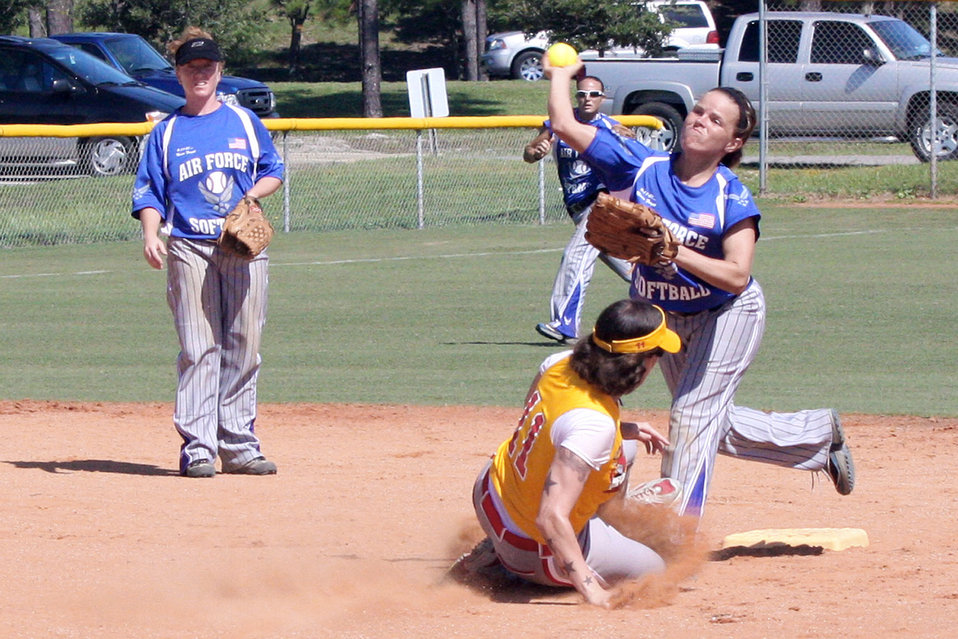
Air Force teams earn gold medals at armed forces softball championships

Toni Epps from Robins Air Force Base, Ga., turns a double-play during the Armed Forces Softball Championships. The Air Force men's and women's softball teams earned gold medals at the event. Epps is from Robins Air Force Base, Ga.